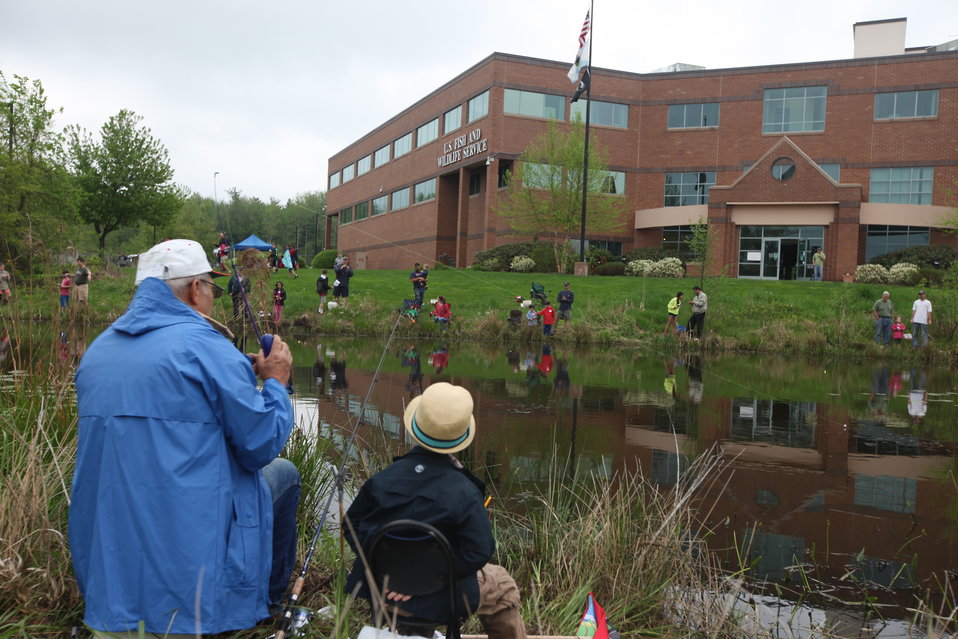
Fishing Derby